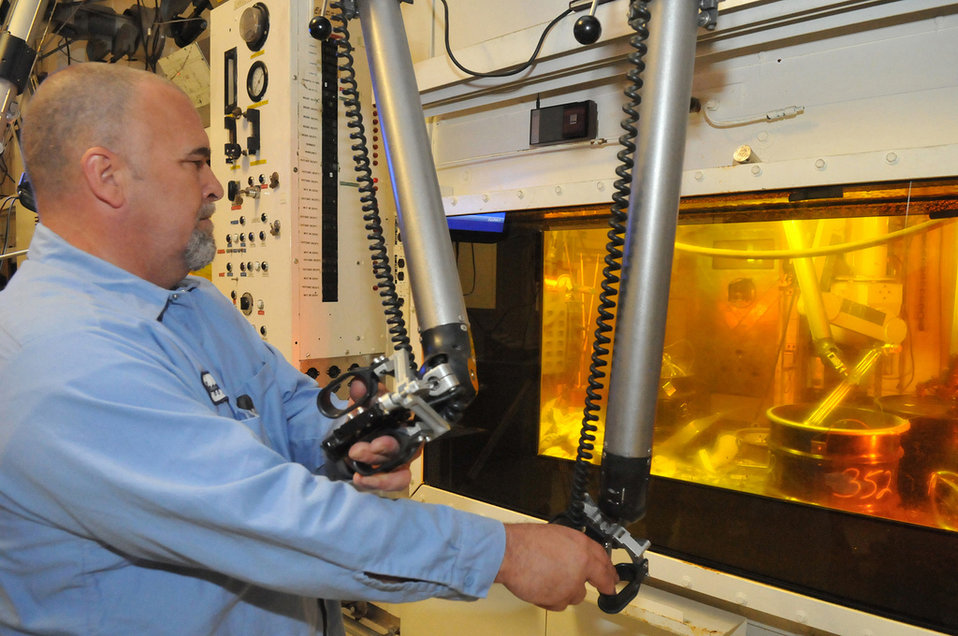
Hot cell techs working in the Alpha Gamma Hot Cell Facility. Remote-handled transuranic waste(RH-TRU) is packaged and certified in the hot cell. The waste will be transported to the WIPP for disposal.

The Next-Phase Transuranic Waste Project is squarely focused on reducing the quality of transuranic waste currently housed at Argonne. Removal of this material supports Argonne's overall goal of reducing its nuclear footprint. The project accelerates work that has already begun by providing additional resources to drive projects across the site.